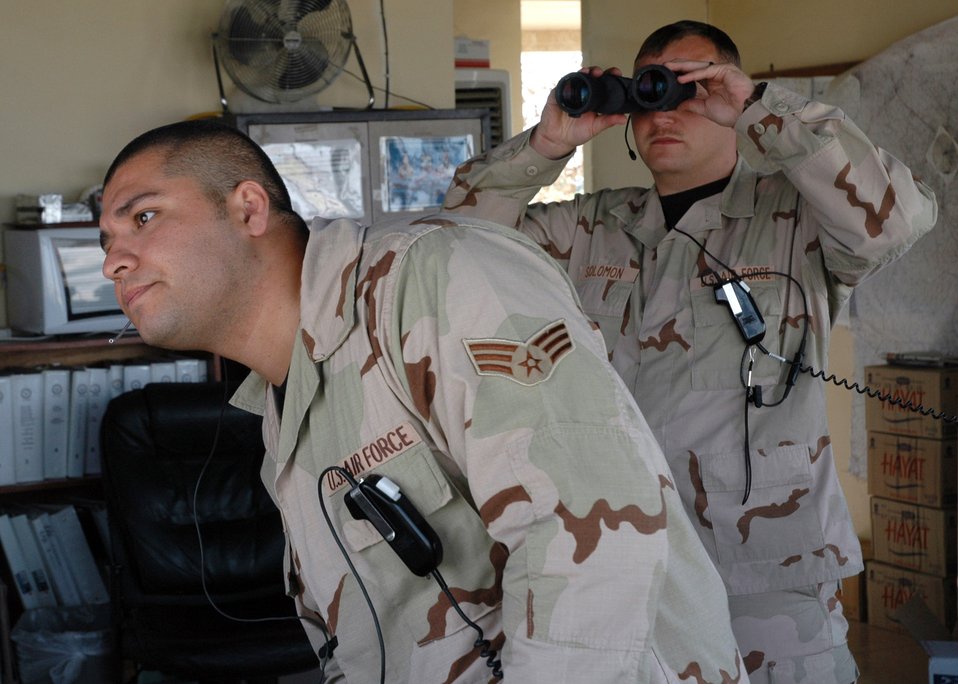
Kirkuk control tower keeps watch day, night

Senior Airman Adam Guerrero (left) and Tech. Sgt. Christopher Solomon watch a C-17 Globemaster III come in for a landing from the air traffic control tower at Kirkuk Air Base, Iraq, on Monday, June 26. The two are assigned to the 506th Expeditionary Operations Support Squadron.